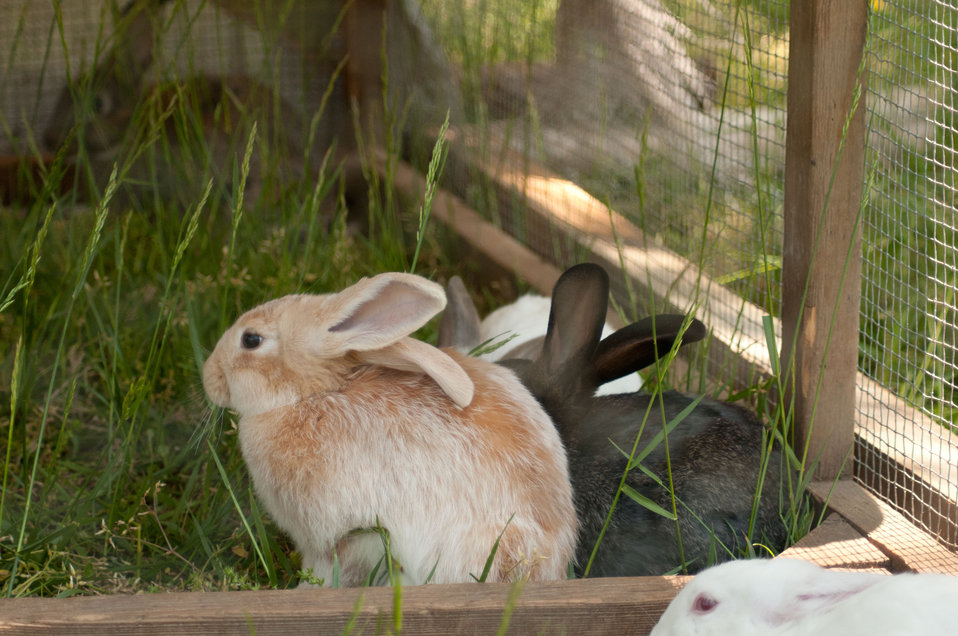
Rabbits are the newest arrivals to Tuckahoe Plantation, in Goochland County, VA on May 5, 2011. The bottomless rabbit cage is progressively moved about the pastures where the rabbits can graze on the grass and insects, and leave nutrient rich manure to revitalize the soil, enhancing regrowth. The plantation was the boyhood home of President Thomas Jefferson from 1745 until 1752, today it is a working farm with cattle, sheep, chickens and rabbits supplying meats to Fall Line Farms a local food hub. Fall Line Farms offers a wide variety of household food staples and specialty items on an ever changing inventory of fruits, vegetables, meats, soaps, eggs, cheeses, flowers, honey, pastas, sauces, syrups, baked goods, mushrooms, flour and grains. Suppliers post what they have on a Lulus Local Food online listing and customers (who pay seasonal dues) make their selection. Then every Thursday suppliers team up with other suppliers to deliver orders to, one of several pick-up points, designated by the customer in or around the Richmond area.